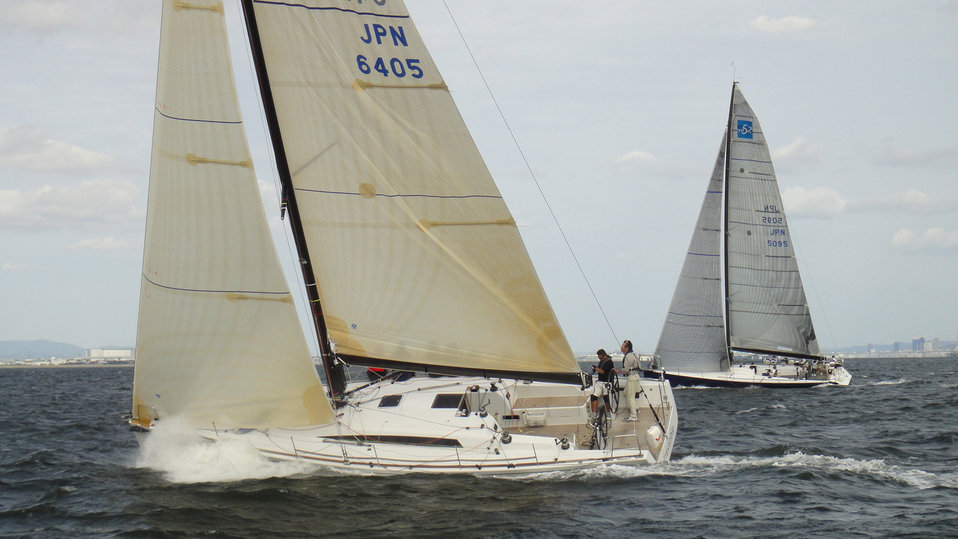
Yacht racing.